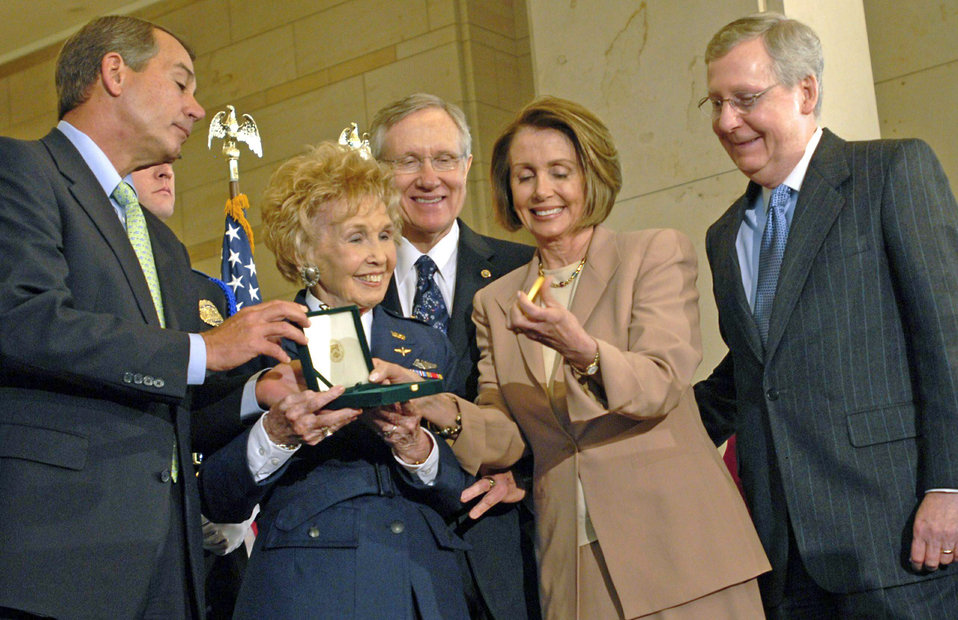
WASPs awarded Congressional Gold Medal

Deanie Parrish, one of the World War II Women Airforce Service Pilots and associate director of Wings Across America, accepts the Congressional Gold Medal on behalf of her fellow WASPs at the Capitol March 10, 2010. Presenting the medal are Speaker Nancy Pelosi, Rep. John Boehner, Sen. Harry Reid and Sen. Mitch McConnell. More than 200 WASPs attended the event, many of them wearing their World War II-era uniforms.